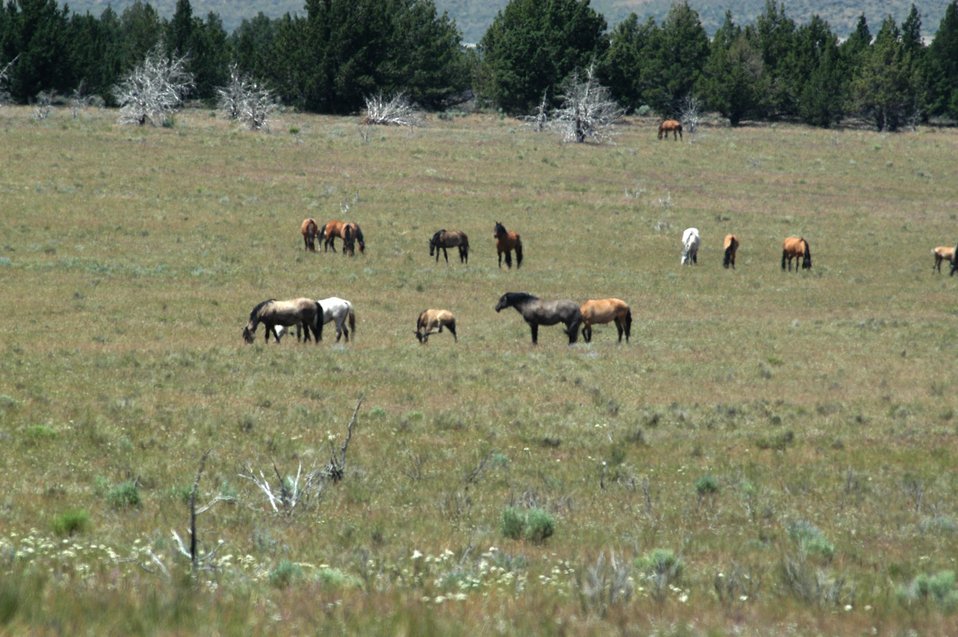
Kiger horses roam the plateaus of the Kiger Wildhorse Herd Management Area near Steens Mountain in Southeastern Oregon.